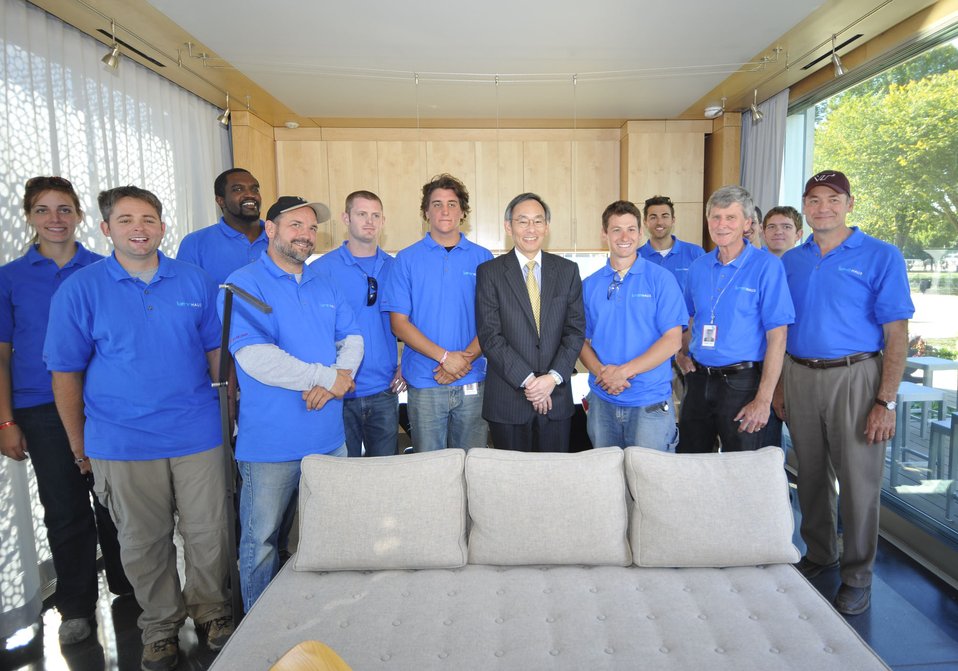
Solar Decathlon 2009 on the National Mall, with Sec. Chu

Solar Decathlon 09